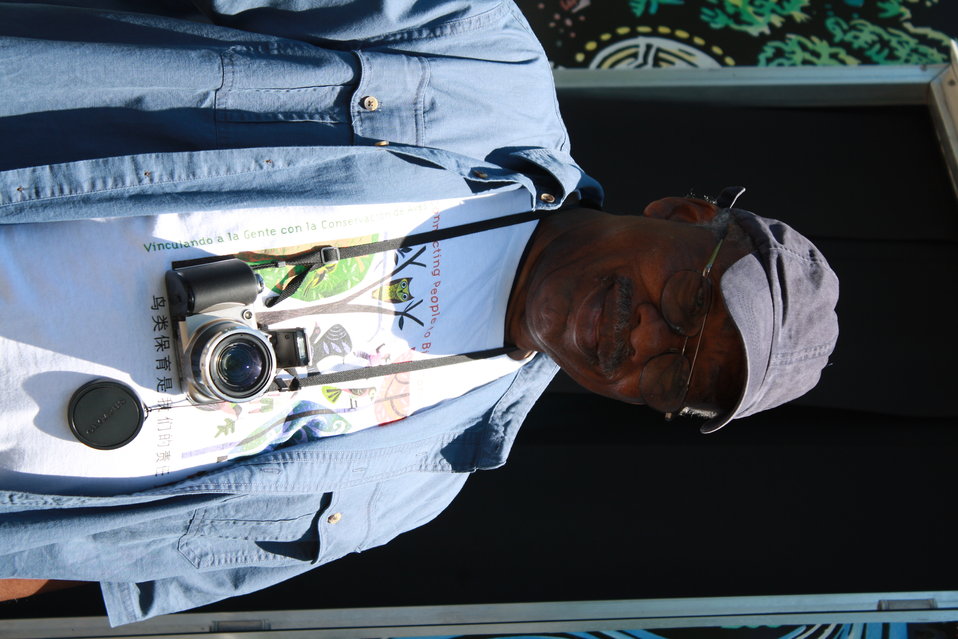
Attendee at the Hartford Urban Bird Treaty

WOW Express at Keney Park in Hartford, Conn.